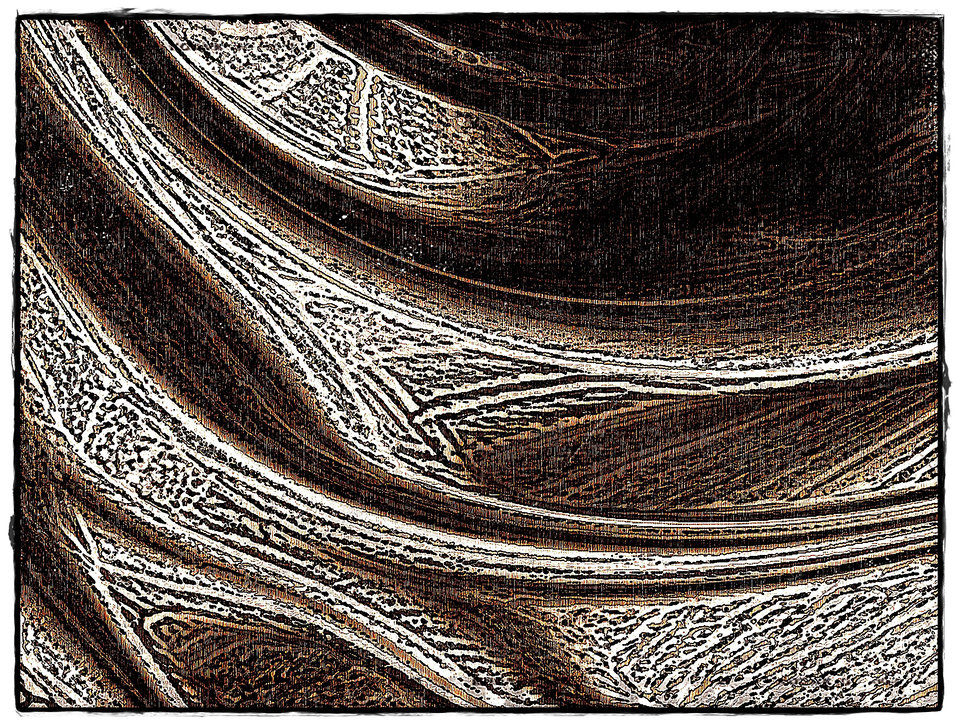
Texture anno 1900

Background texture.